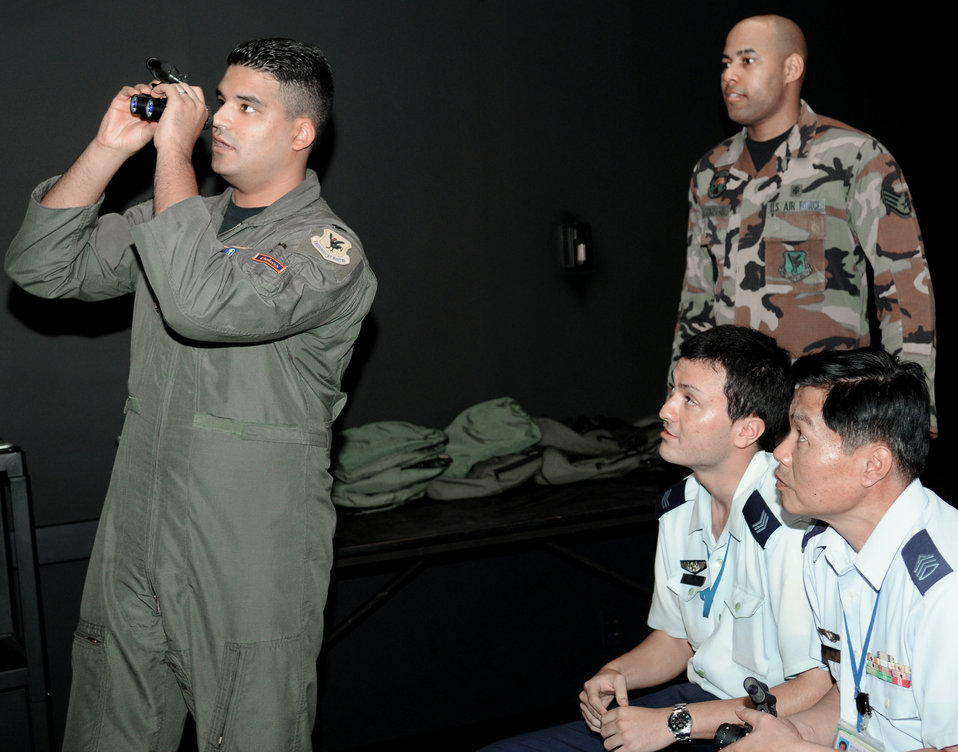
Kadena conducts bilateral cultural exchange

U.S. Air Force Capt. Alex Ramos and Staff Sgt. Sadek Brandford give a demonstration on night vision goggles to visiting enlisted Japan Air Self Defense Force members April 15 as part of the bilateral exchange program at Kadena Air Base, Japan. The Airmen are with the physiology operations element at the 18th Aerospace Medical Squadron.